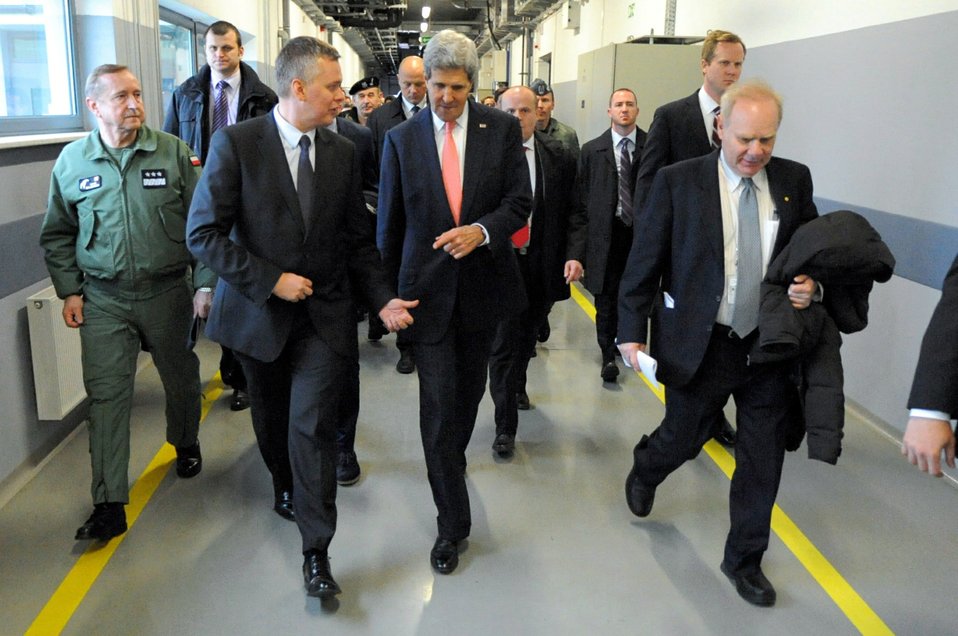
Secretary Kerry Walks With Polish Defense Minister Siemoniak

Polish Defense Minister Tomasz Siemoniak walks with U.S. Secretary of State John Kerry before their meeting at the Lask Military Airbase in Poland on November 5, 2013.